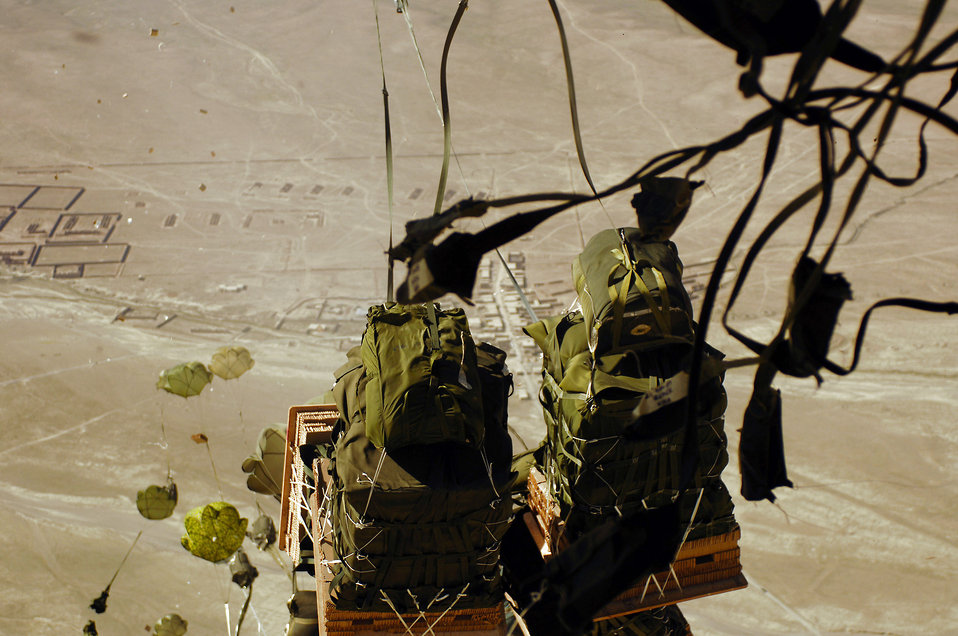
Afghanistan airdrop

Forty bundles of humanitarian supplies are dropped from a C-17 Globemaster III using the Joint Precision Airdrop Delivery System to a drop zone April 13 in Afghanistan. The C-17 aircrew is from the 17th Airlift Squadron from Charleston Air Force Base, S.C.